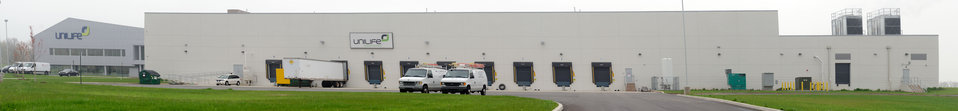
(Virtual panorama, best viewed with largest download) Shipping and receiving docks at Unilife, a medical device company focused on the design, development, manufacture and supply of a proprietary range of retractable syringes on Monday, April 20, 2011 in York, PA. In partnership with Sanofi-aventis, Mikron Group, and MDMA, U.S. Department of Agriculture Rural Development was able to guarantee $18,000,000 through its Business and Industry Guaranteed Loan Program to construct a custom-built, global headquarters and commercial production facility in York, Pennsylvania. The 165,000 sq. ft. facility was completed in late 2010 and can accommodate future growth as well as the Company’s projected demand from pharmaceutical and healthcare companies for its proprietary range of Unifill ready-to-fill (prefilled) and Unitract general purpose safety syringes. Stage one of the facility is designed to accommodate the production of up to 400 million Unilife syringes per year and to meet stringent pharmaceutical standards for primary drug containers. Adjacent to the manufacturing facility is Unilife’s global headquarters that support administrative, marketing, new product development, quality laboratories and other operational functions. Unilife, which first arrived in Pennsylvania in 2006. The company has doubled its employees for the past three years. There are approximately 150 employees, and they expect to double the number by 2015.